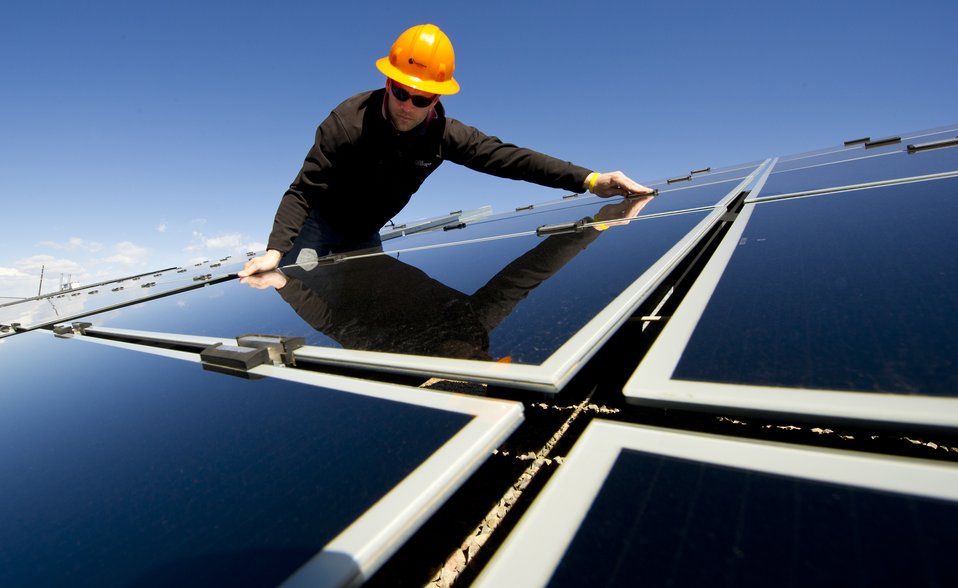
Solar Testing Facility

teven Bohn, an engineer at SunEdison oversees SunEdison's testing facility at SolarTAC in Aurora, CO. The SolarTAC mission is to increase the efficiency of solar energy products and rapidly deploy them to the commercial market.